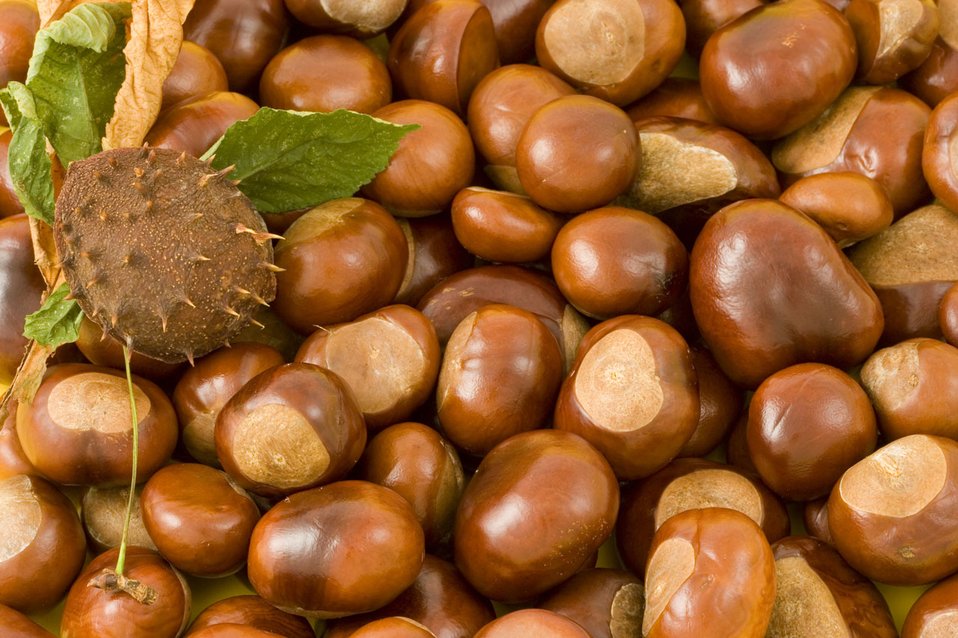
Conkers with a leaf

Beautiful picture of conkers with a leaf.